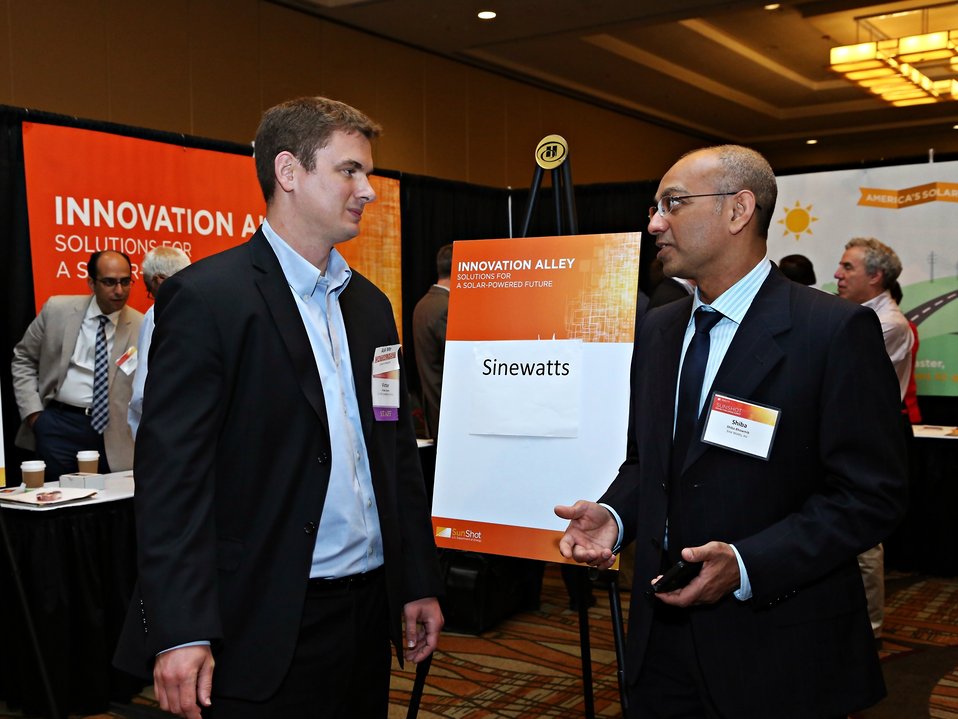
VIP Walkthough 8